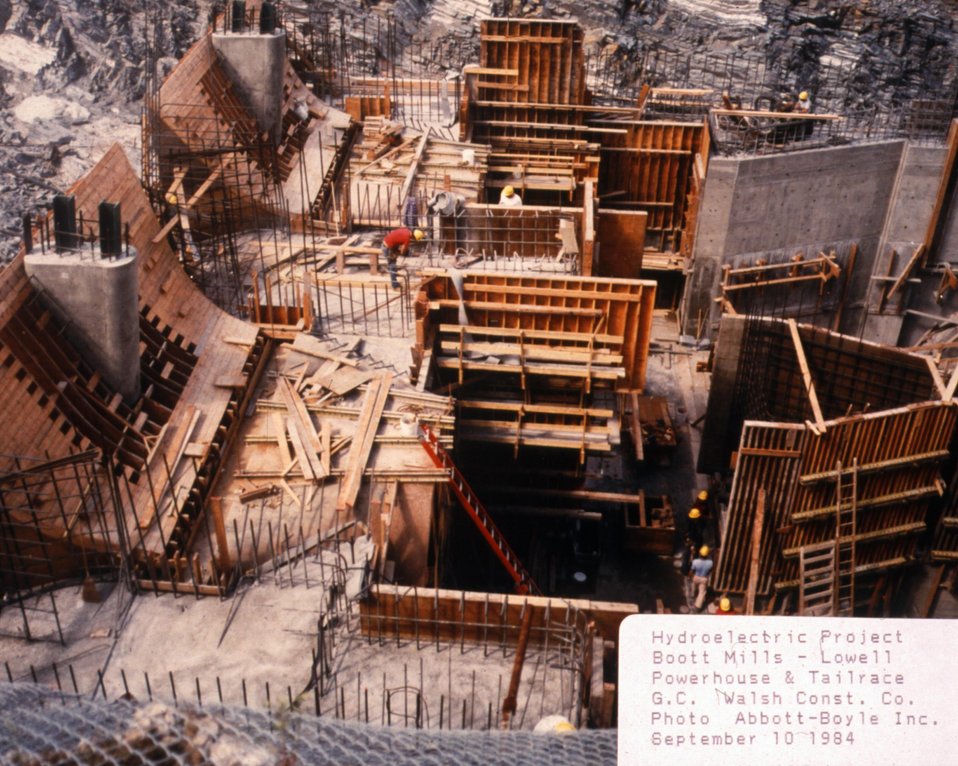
GENERAL VIEW OF POWERHOUSE CONSTRUCTION.

THE DOE SMALL-SCALE HYDROPOWER PROGRAM CONSISTS OF 19 PROJECTS AND DEMONSTRATES THE VIABILITY OF SMALL-SCALE HYDRO-POWER WITH AVAILABLE TECHNOLOGY. THE BOOTT MILLS PROJECT, BEGUN IN OCTOBER, 1983, WENT ON LINE IN NOVEMBER, 1985. UTILIZING TWO KAPLAN TURBINES THAT PRODUCE A MAXIMUM OF 15,000 KILOWATTS, THE DAM PROVIDES A GROSS HEAD OF 35 FEET WITH AN ANNUAL STREAM FLOW OF 4,500 CFS.